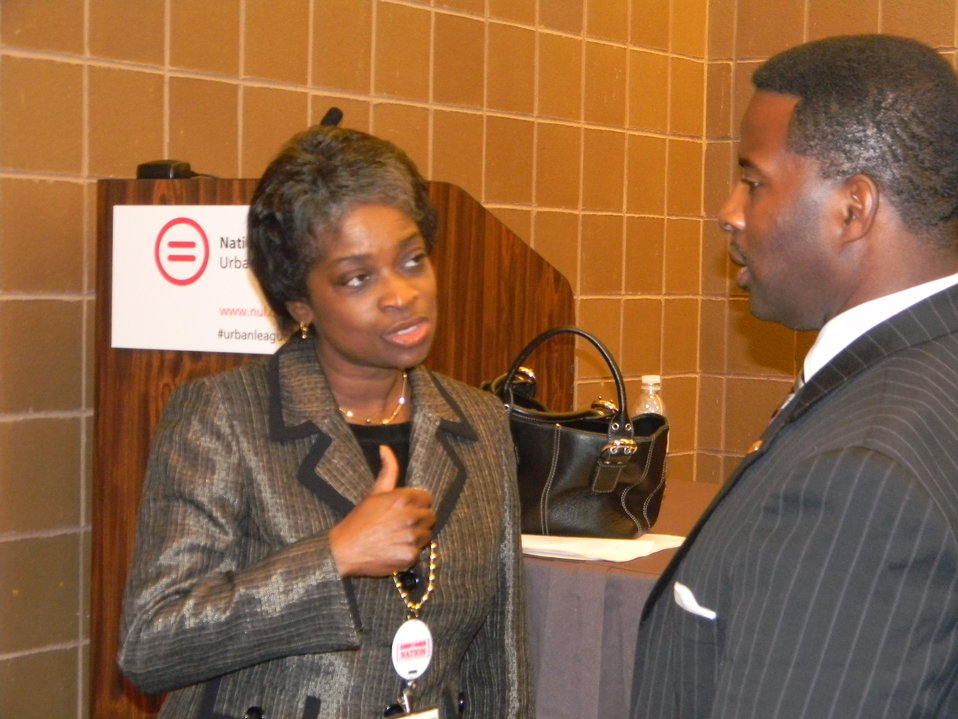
2012 National Urban League Conference

Commissioner Mignon Clyburn & conference attendee discussing Broadband Adoption in African American Communities.